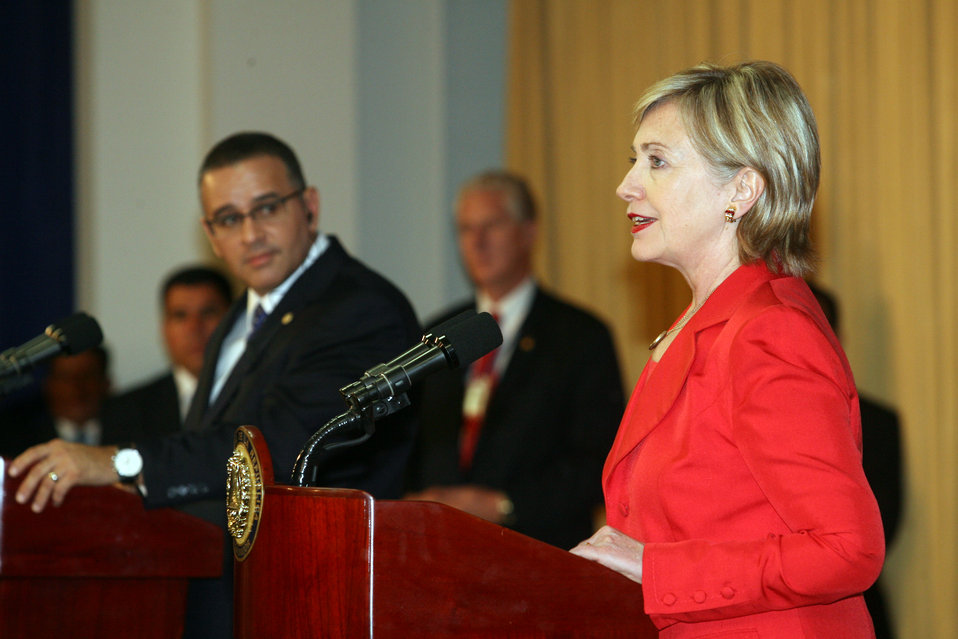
Joint Press Conference in El Salvador With Secretary Clinton and Salvadoran President

U.S. Secretary of State Hillary Rodham Clinton answers questions from the media as President Mauricio Funes listens during a press conference held in the Presidential Palace in San Salvador, El Salvador June 1, 2009. Secretary Clinton and Salvadoran President Mauricio Funes met during bilateral meeting held after his Presidential Inauguration on June 1st. Secretary Clinton headed the US Delegation for the Presidential Inauguration.